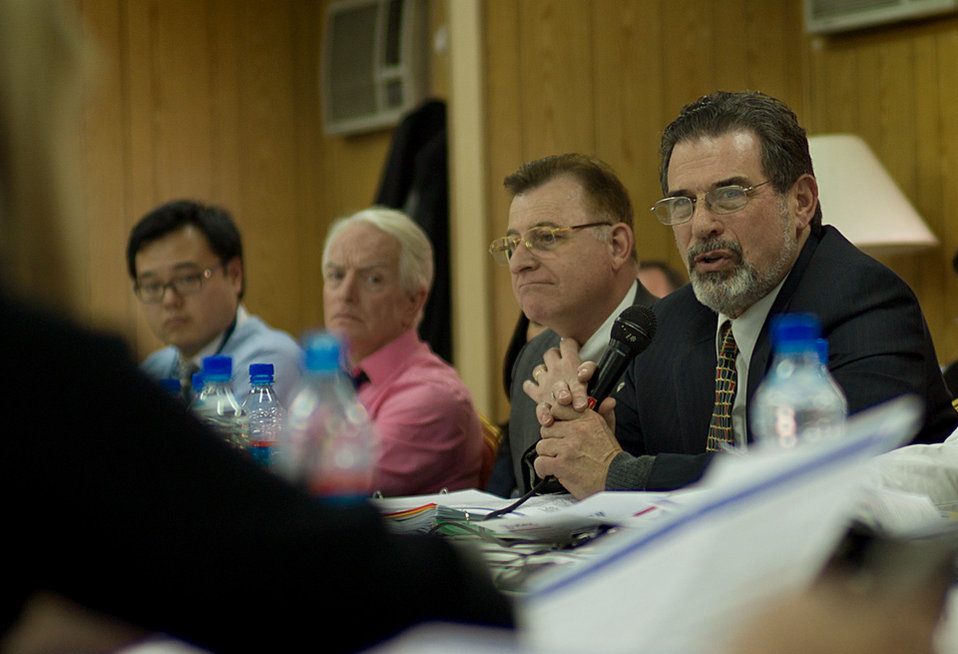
Moderator